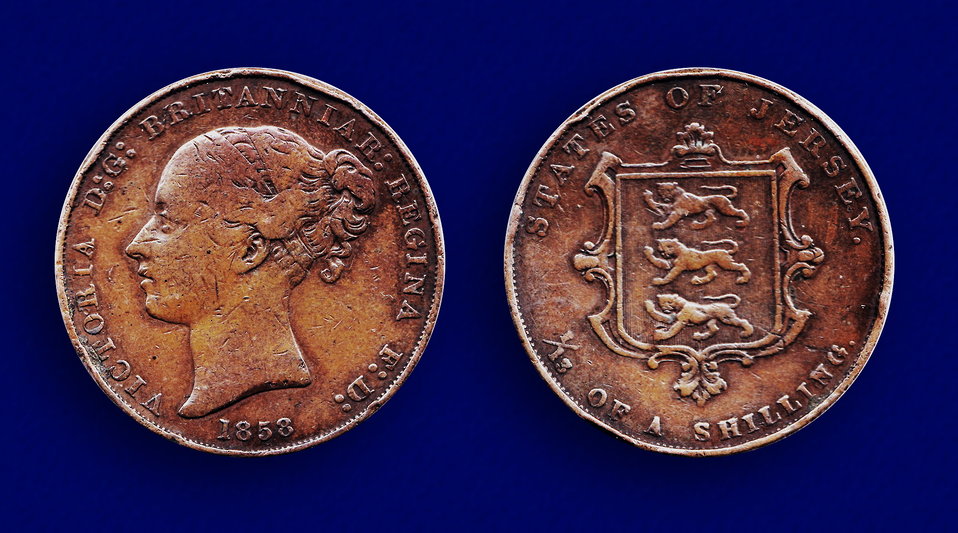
1858 States of Jersey 1/13 of a Shilling (J#6, KM#3, 34.10mm, copper)